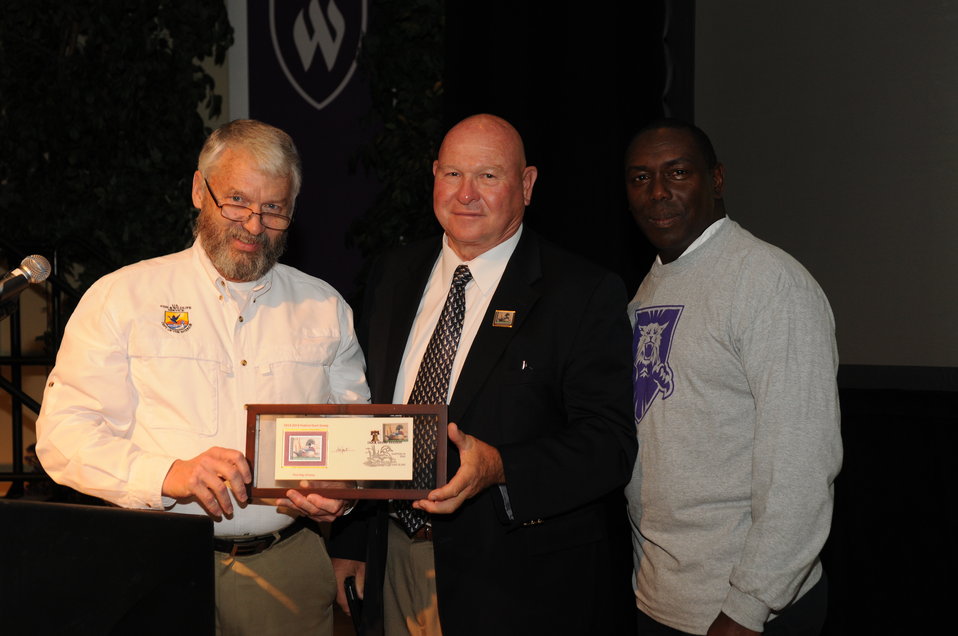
Judge Recognition

The U.S. Fish & Wildlife Service sponsored the 2012 Federal Duck Stamp Art Contest September 28 and 29 in Ogden, Utah, at Weber State University. A panel of five judges was responsible for choosing the art work used to design the 2013-2014 Migratory Bird Hunting and Conservation Stamp.